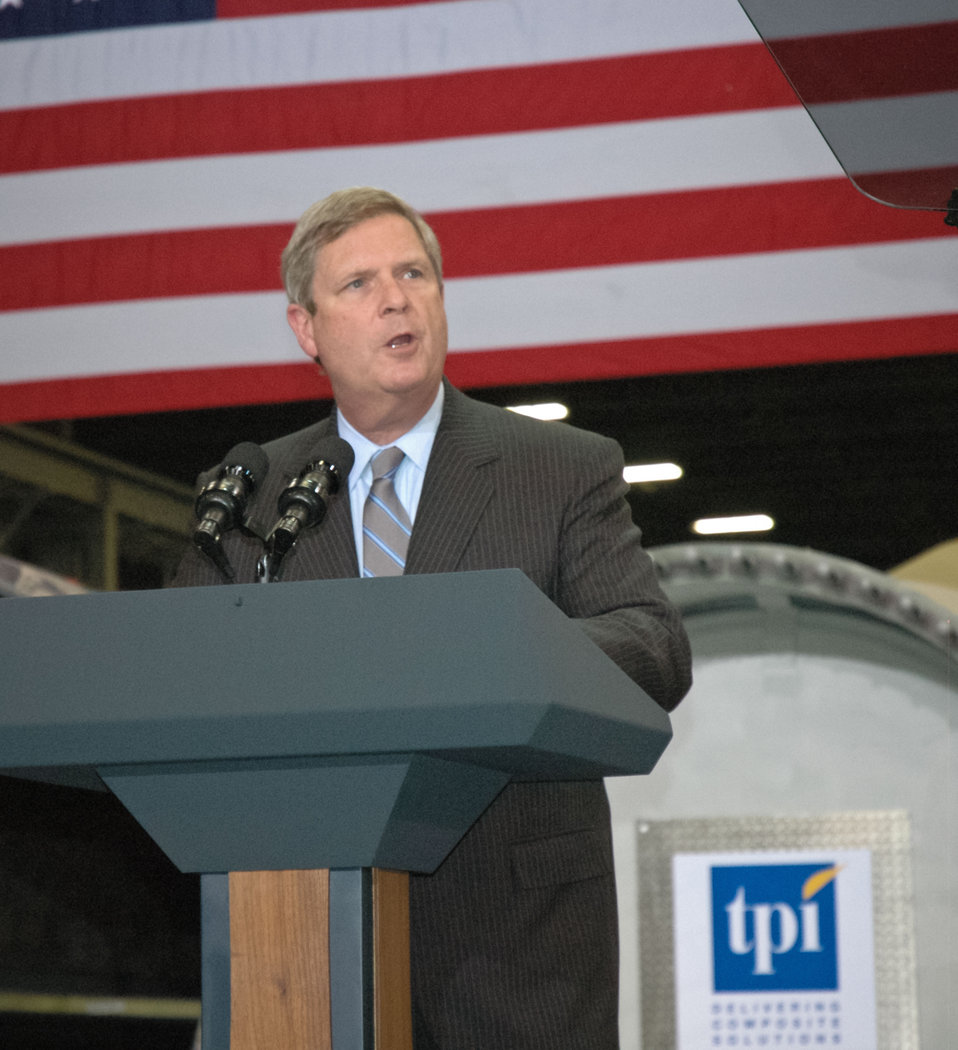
Agriculture Secretary Tom Vilsack speaks to a crowd of about 500 people at TPI, a maker of wind turbine blades that employs 700 people at its Newton, Iowa plant on Thursday, May 24, 2012.